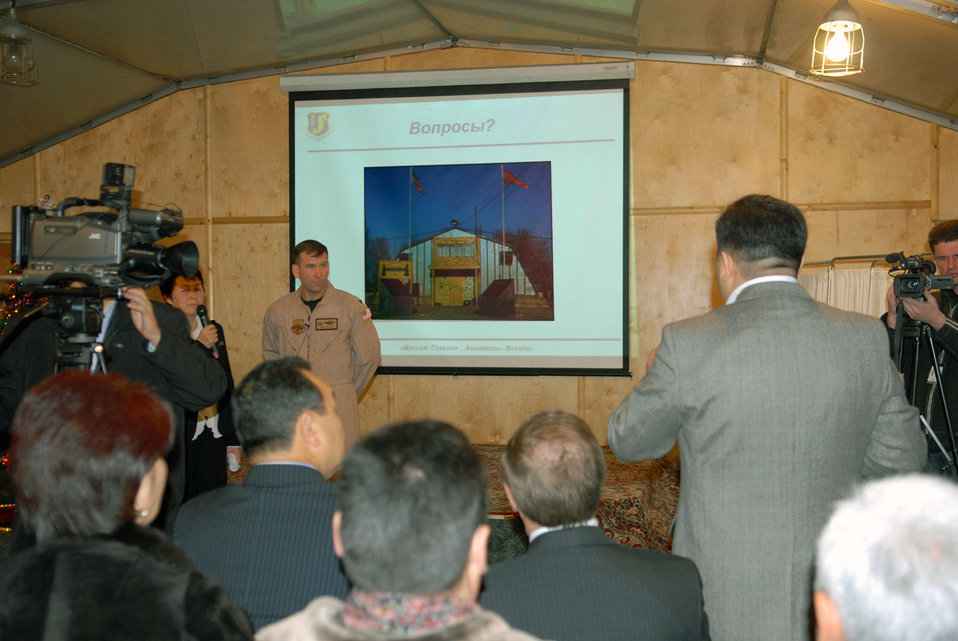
Kyrgyzstan parliament members visit Manas

Col. Christopher Bence answers questions during a mission briefing to members of the Kyrgyz parliament during a Dec. 15 visit to Manas Air Base, Kyrgyzstan. Colonel Bence is the 376th Air Expeditionary Wing commander.